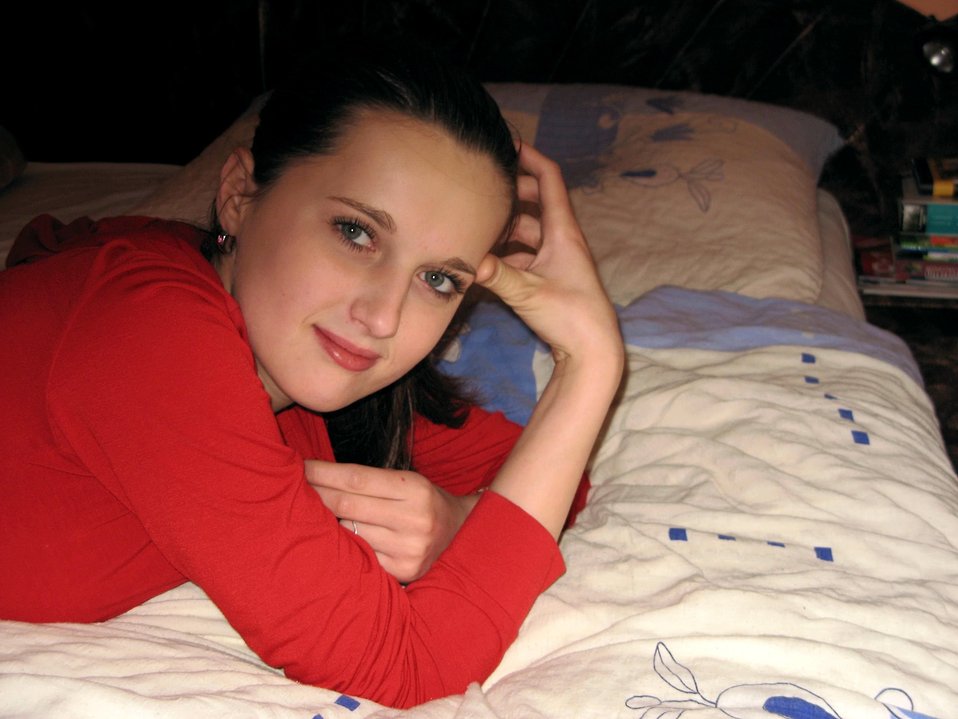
English:
Image title: Lying beautiful girl Image from Public domain images website, http://www.public-domain-image.com/full-image/people-public-domain-images-pictures/female-women-public-domain-images-pictures/lying-beautiful-girl.jpg.html